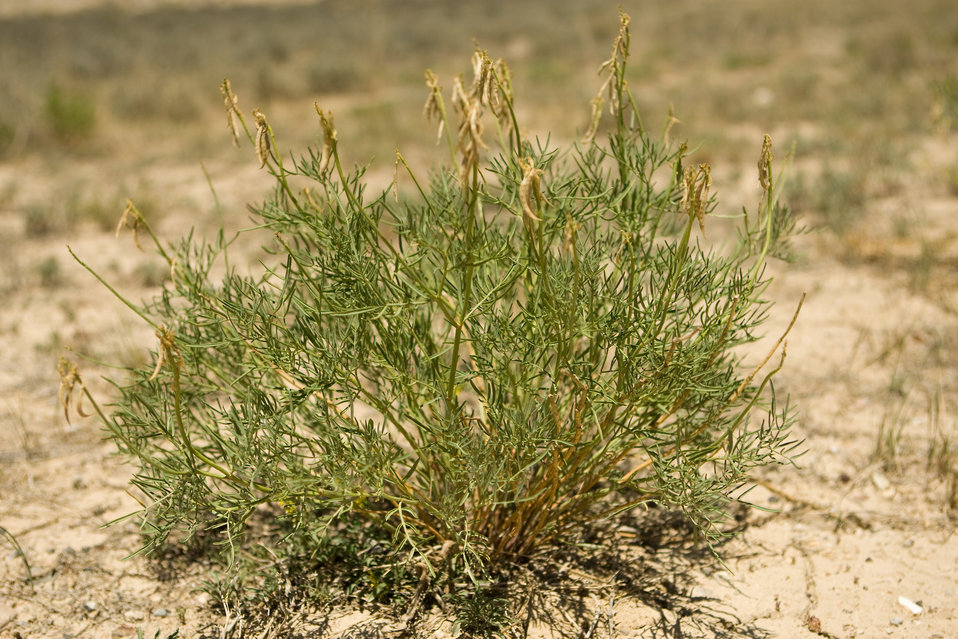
Colorado Rare Plant Conservation Initiative

The Colorado Rare Plant Conservation Initiative (RPCI) is a partnership of 23 statewide and regional agencies, private organizations, and academic institutions working to conserve 121 rare plants in Colorado. As part of these efforts the group developed the Colorado Rare Plant Conservation Strategy, developed Best Management Practices to reduce energy development impacts, addressed climate change, and developed focused strategies for the conservation of individual species at eight priority landscapes. The group has also worked to coordinate volunteer efforts for plant conservation across the state.